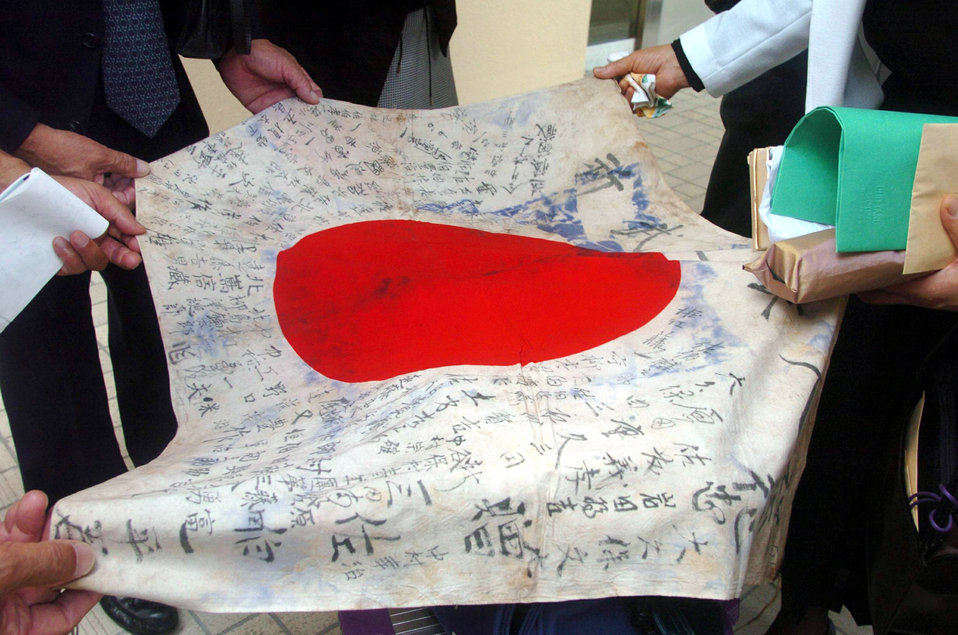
Honoring the past

YOKOTA AIR BASE, Japan -- A flag belonging to Ippei Saeki, a Japanese soldier who died fighting against American forces during World War II, was returned to his family during a ceremony here Aug. 6. The flag was signed and given Mr. Saeki by his friends and relatives before he went off to fight in the war.